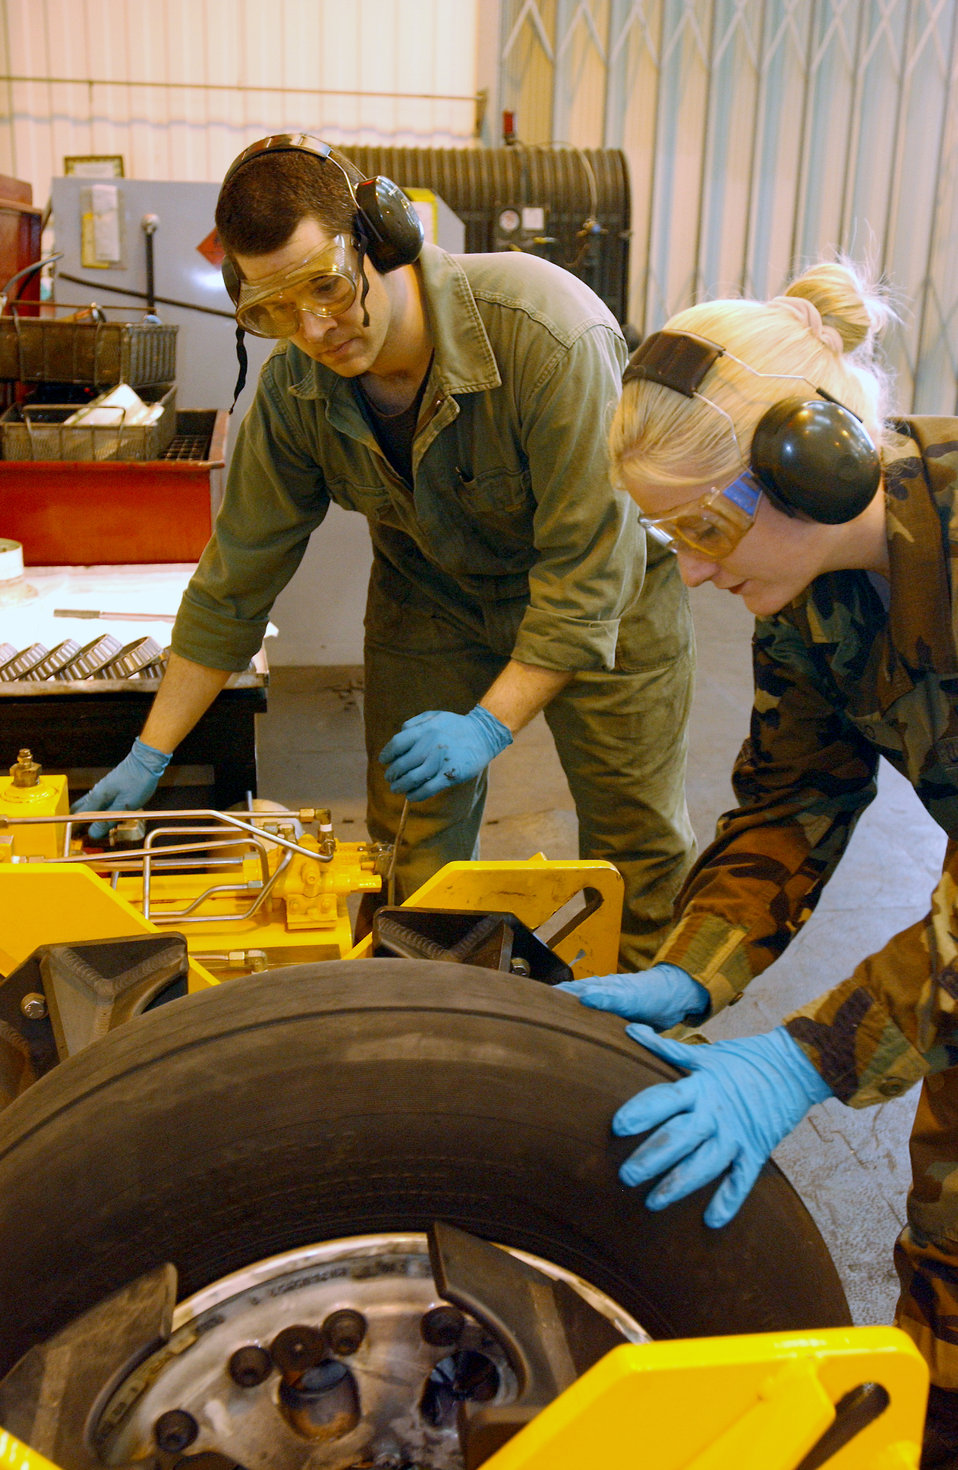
Wheels keep on turning

ROYAL AIR FORCE LAKENHEATH, England -- Staff Sgts. Jessica Oviedo (right) and John Overby break the bead on an F-15 Eagle main wheel assembly the using the bead breaking machine here April 13. Breaking the bead unseats the tire from the wheel. Sergeants Oviedo and Overby are crew chiefs assigned to the 48th Equipment Maintenance Squadron.